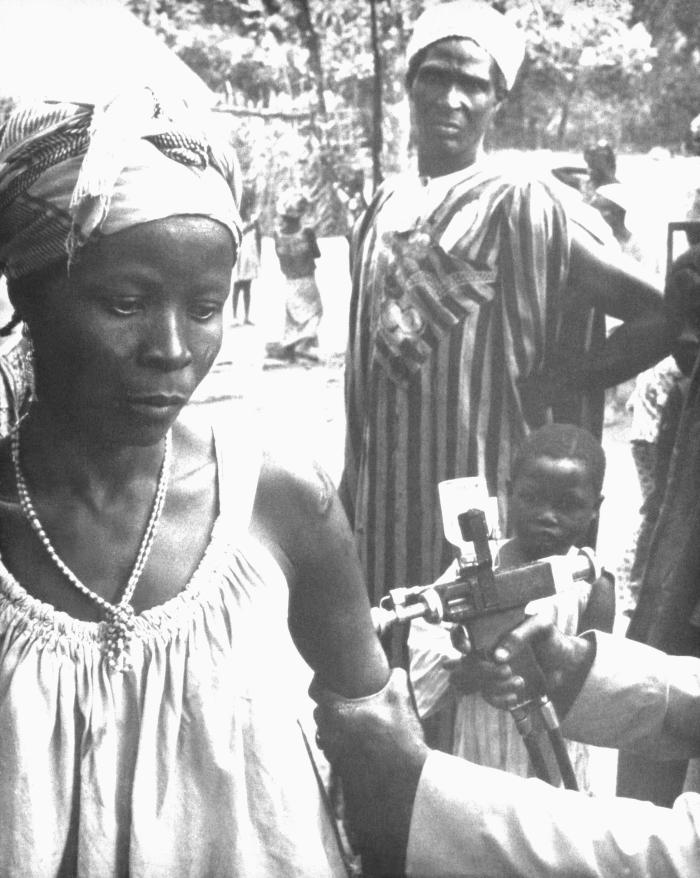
This 1967 photograph depicting a Togolese woman being vaccinated against smallpox, was taken just prior to the kick-off of the Global Smallpox Eradication Program, whereupon, the world's public health organizations - led by the United States and the then-Soviet Union - came together to join in the fight to eradicate smallpox from the world.